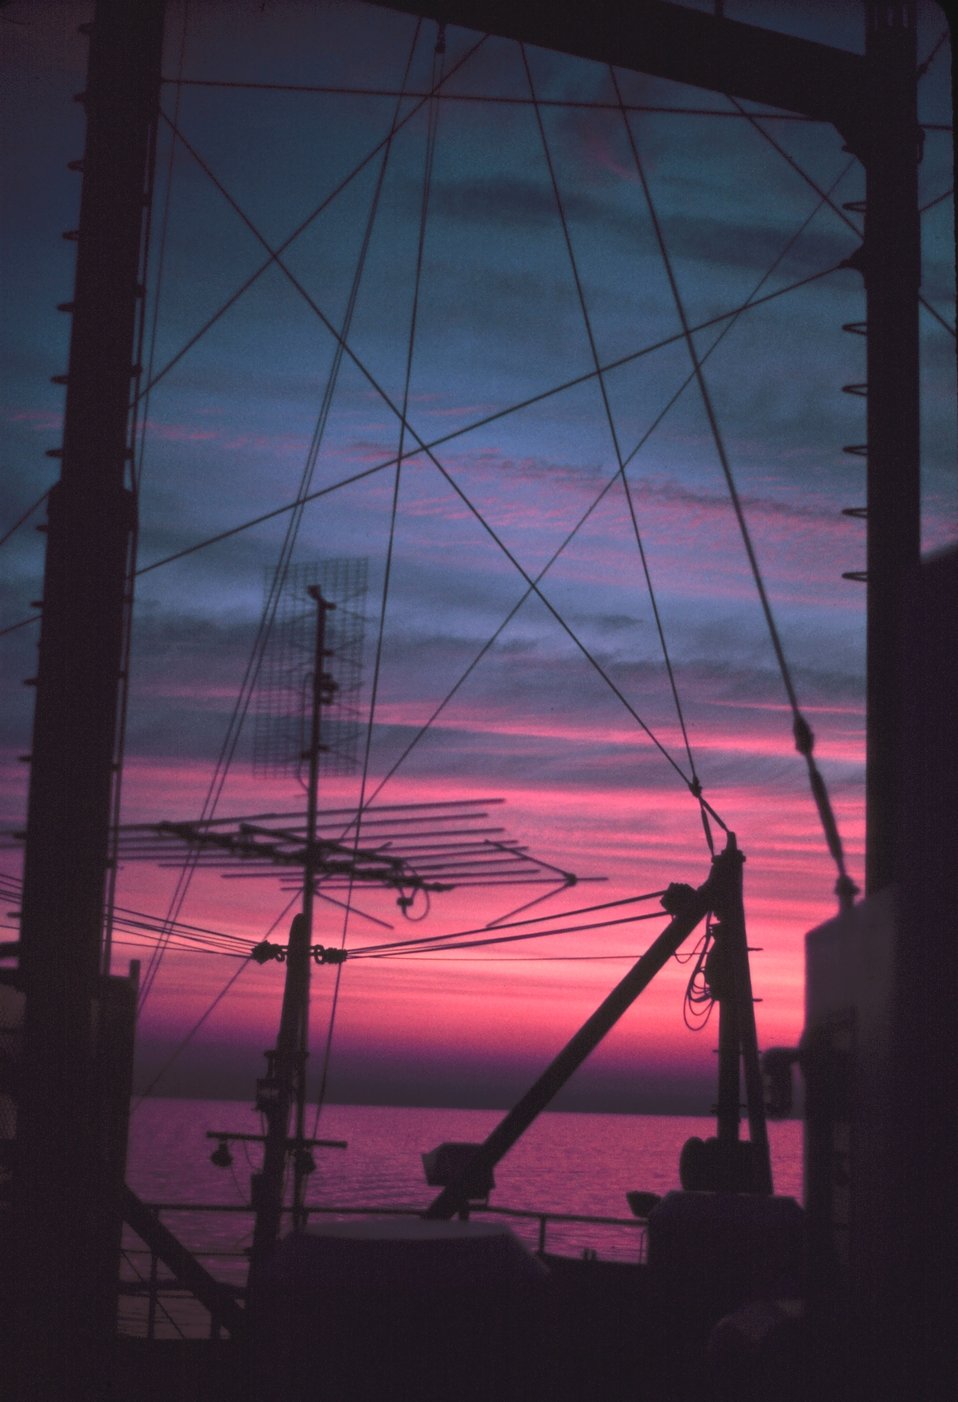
ALBATROSS IV rigging and antennas superimpose geometric patterns on sunset.